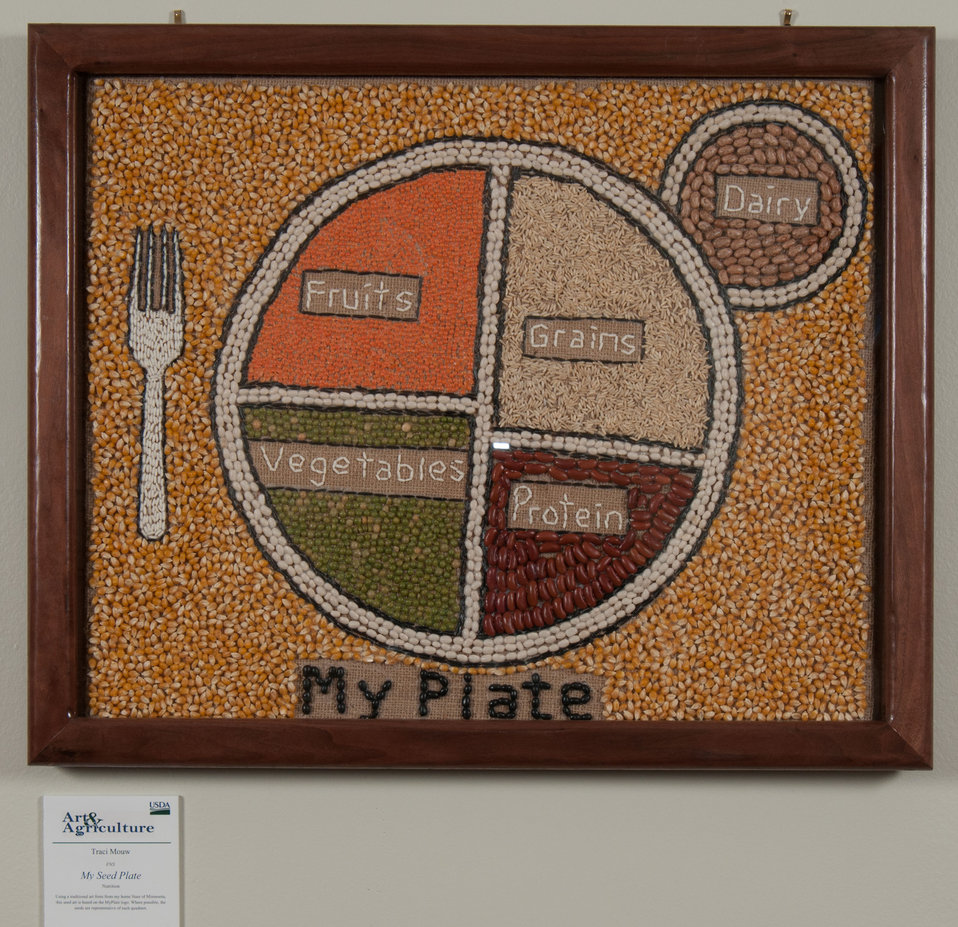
Online Viewer's Choice entries of the 2013 Art & Agriculture, Tuesday, July 9, 2013, in the South Building, Washington, D.C. Themes were expressed by employees from across the department and the contest was open to full-time and part-time USDA employees. Winning artwork will be displayed till the end of the year. U.S. Artistic expression is a creative outlet that is vital for an individual to grow and develop.